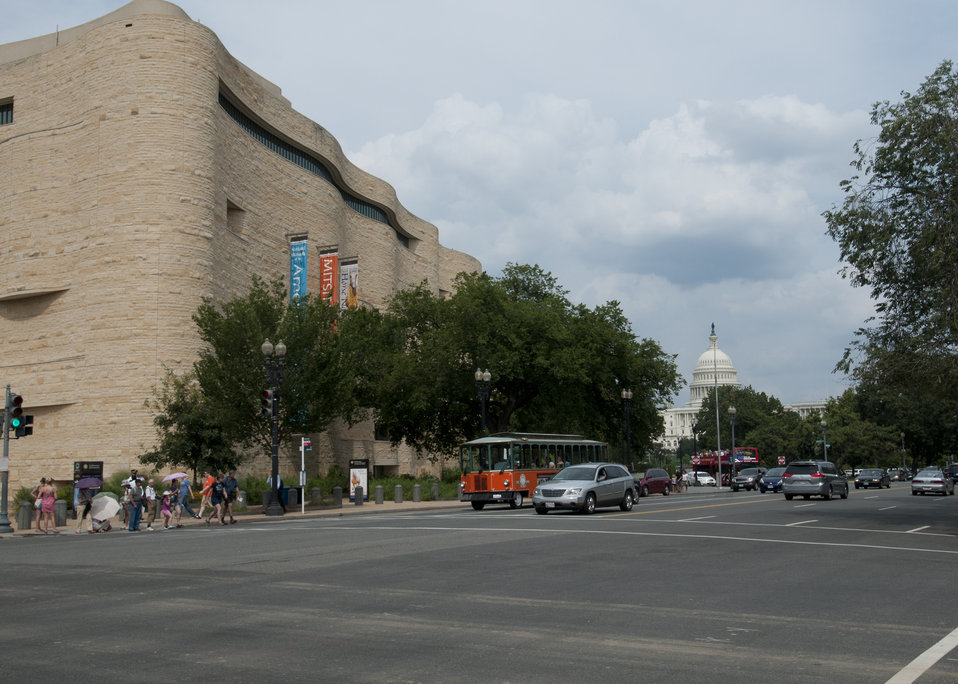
The National Museum of the American Indian operates under the auspices of the Smithsonian Institution on the National Mall in Washington, D.C. The museum is dedicated to the life, languages, literature, history, and arts of the Native Americans of the Western Hemisphere.